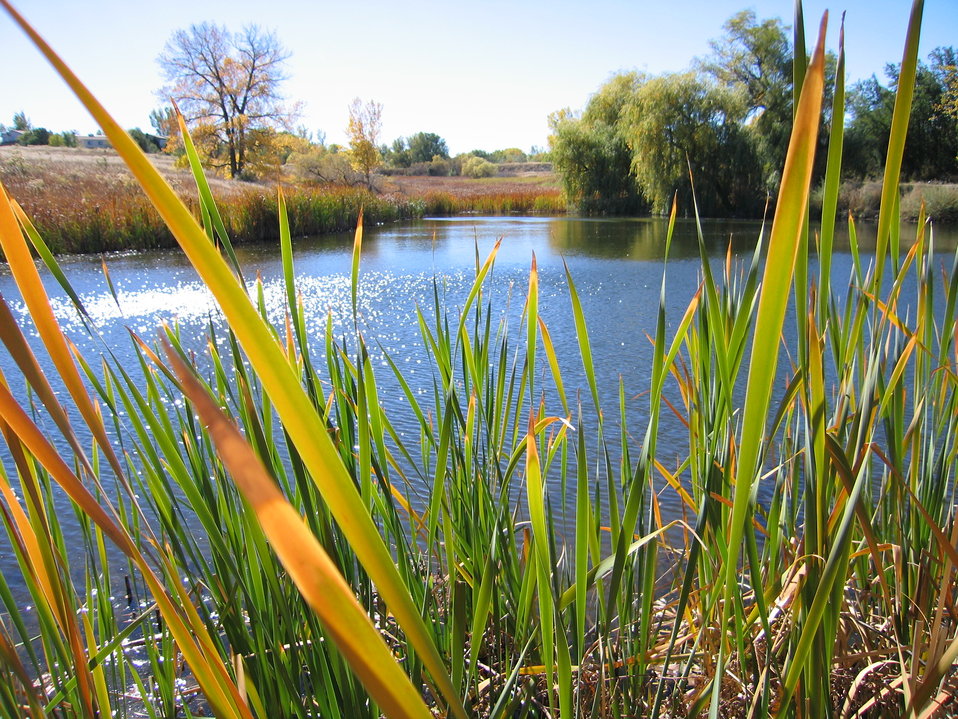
Marshall Pond after the Flood - Two Ponds NWR

A post-flood view of Marshall Pond at Two Ponds NWR.

On Thursday, September 12, 2013, Two Ponds National Wildlife Refuge began to experience heavy rainfall. The Croke Canal bordering the Refuge overflowed onto the southern portion of 80th Avenue and the Refuge's ponds became filled beyond capacity. The wetlands on the Refuge helped absorb the flood waters nearby and no damage occurred on Two Ponds.